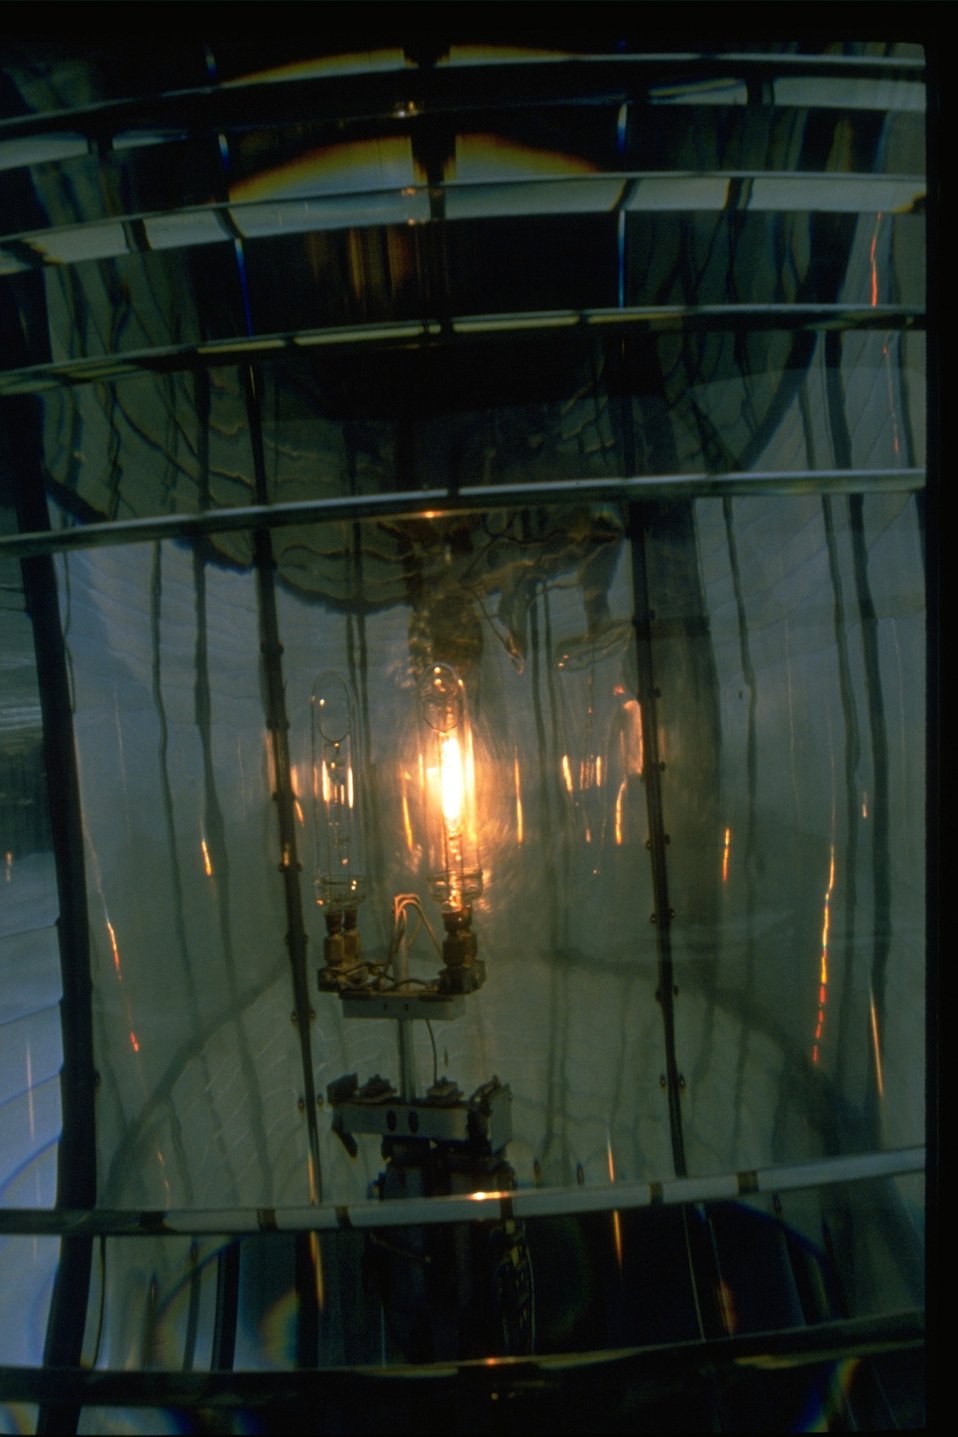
Yaquina Head Lighthouse Lens.